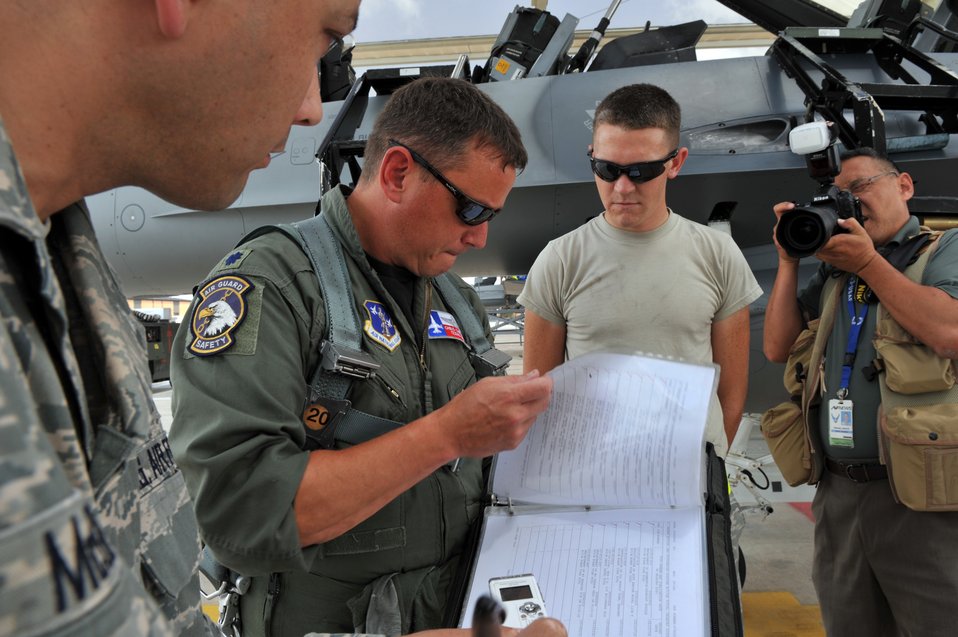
Civilian photo

Lance Cheung and Tech Sgt. Matthew McGovern document members of the Texas Air National Guard's 149th Fighter Wing as they perform a pre-flight check up Aug. 18 at Lackland Air Force Base, Texas. Cheung is a photojournalist and Sergeant McGovern is a journalist assigned to the Defense Media Activity - San Antonio.